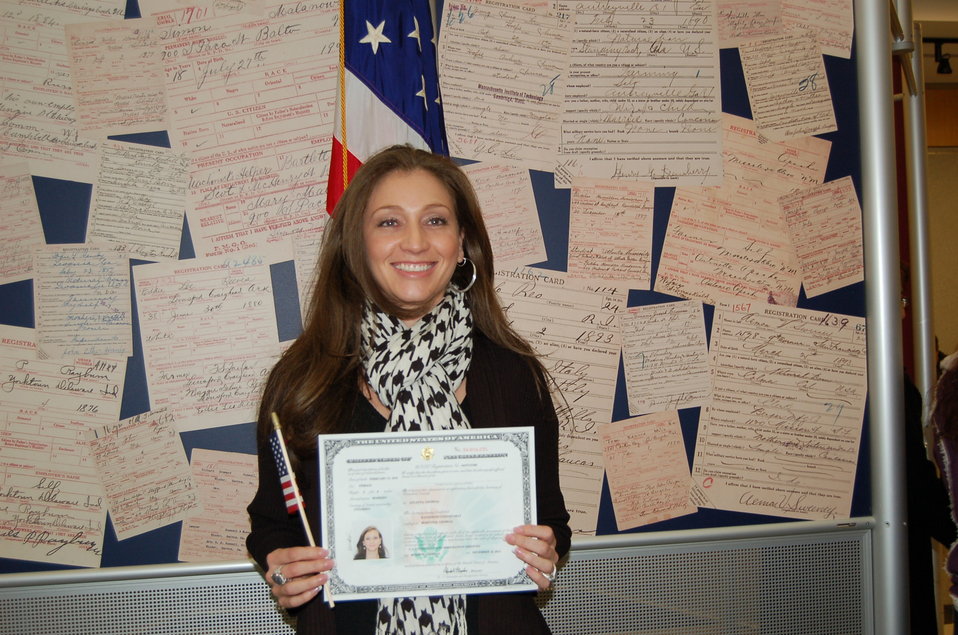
New Citizens